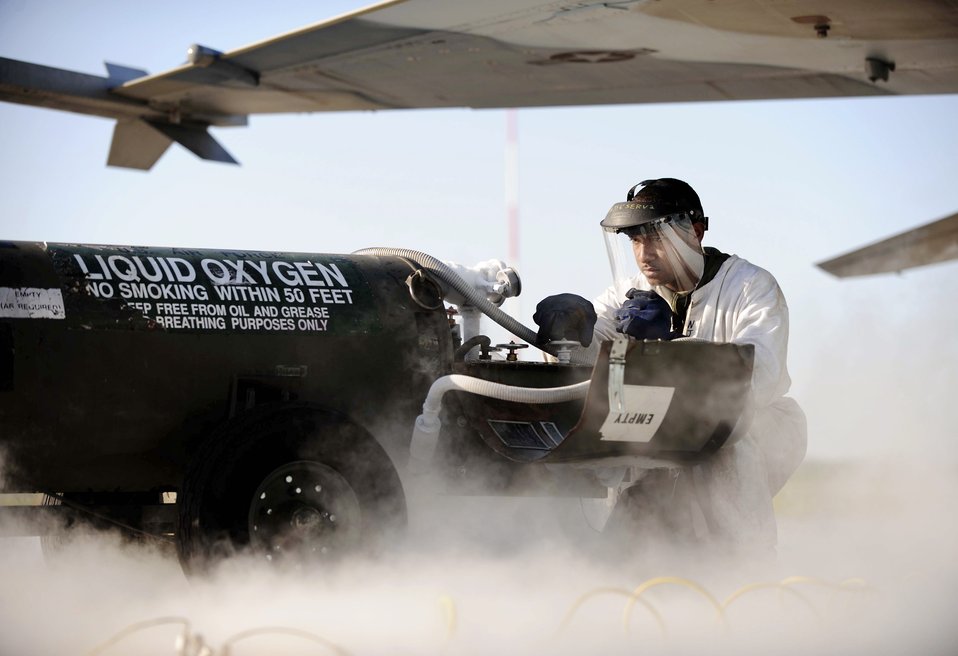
No smoke in my eyes...

Crew chief Senior Airman Robert Smith performs liquid oxygen servicing before morning launch during the Maple Flag 42 exercise at 4th Wing Cold Lake in Canada, June 2, 2009. Maple Flag provides aircrews simulated combat training to coalition forces in a NATO environment. Airman Smith is assigned to the 57th Aircraft Maintenance Squadron at Nellis Air Force Base, Nev.